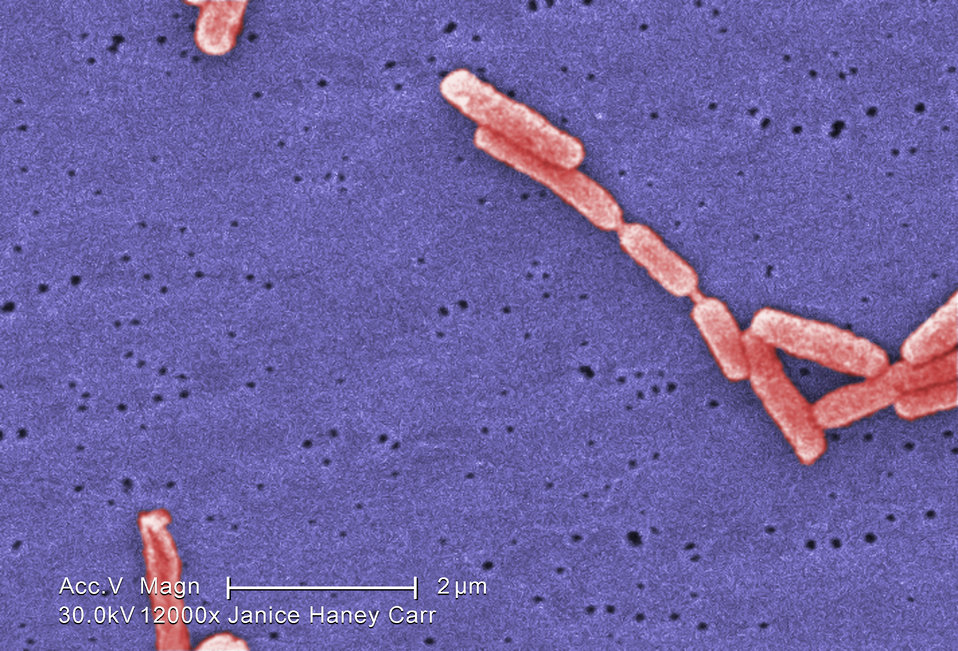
Under a high magnification of 12000X, this colorized scanning electron micrograph (SEM) depicted a small grouping of Gram-negative Legionella pneumophila bacteria. Please see PHIL 11092 through 11152 for additional SEMs of these organisms, specifically PHIL 11123 for a black and white version of this image. It appears that a few are still joined to one another just prior to the completion of their reproductive process known as cell division. In some of these views you'll note the presence of flagellar appendages.